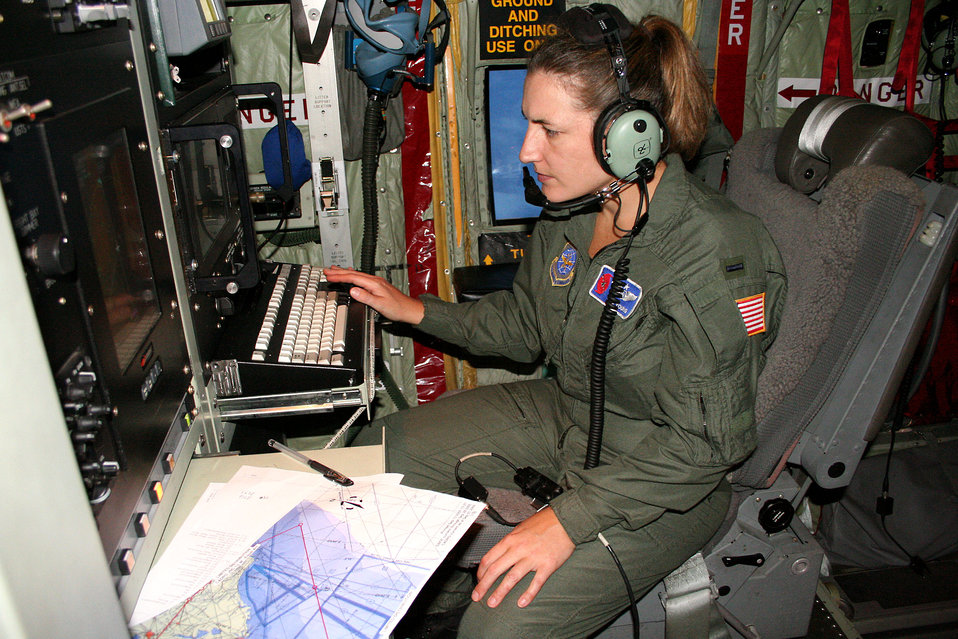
Hurricane hunters on the heels of Hurricane Ophelia

OVER THE ATLANTIC OCEAN -- First Lt. Tina Young examines data gathered while flying into the eye of Hurricane Ophelia on Sept. 14. As a member of the Hurrican Hunters, the lieutenant relayed weather information directly to the National Hurricane Center to help people along the east coast prepare for the approaching storm. Lieutenant Young is an aerial reconnaissance weather officer with the 53rd Weather Reconnaissance Squadron that has temporarily relocated from Keesler Air Force, Miss., to Dobbins Air Reserve Base, Ga.